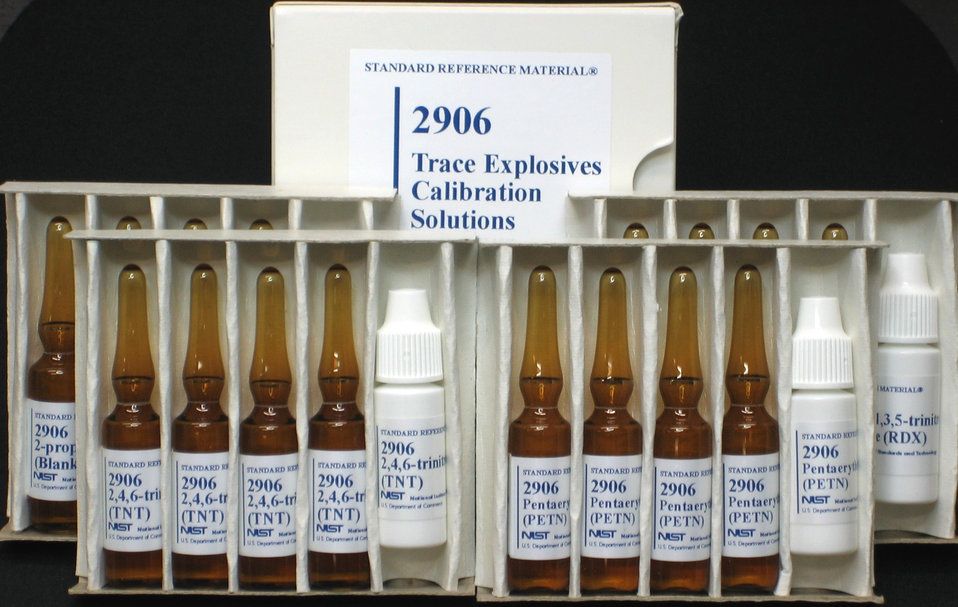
SRM 2906 includes four ampoules of each of the three explosives and a blank along with a dropper bottle for each. NIST researchers formulated the concentrations of these solutions to be near but above the detection limit of commercial swipe-type detectors, which are commonly based on ion mobility spectrometry.